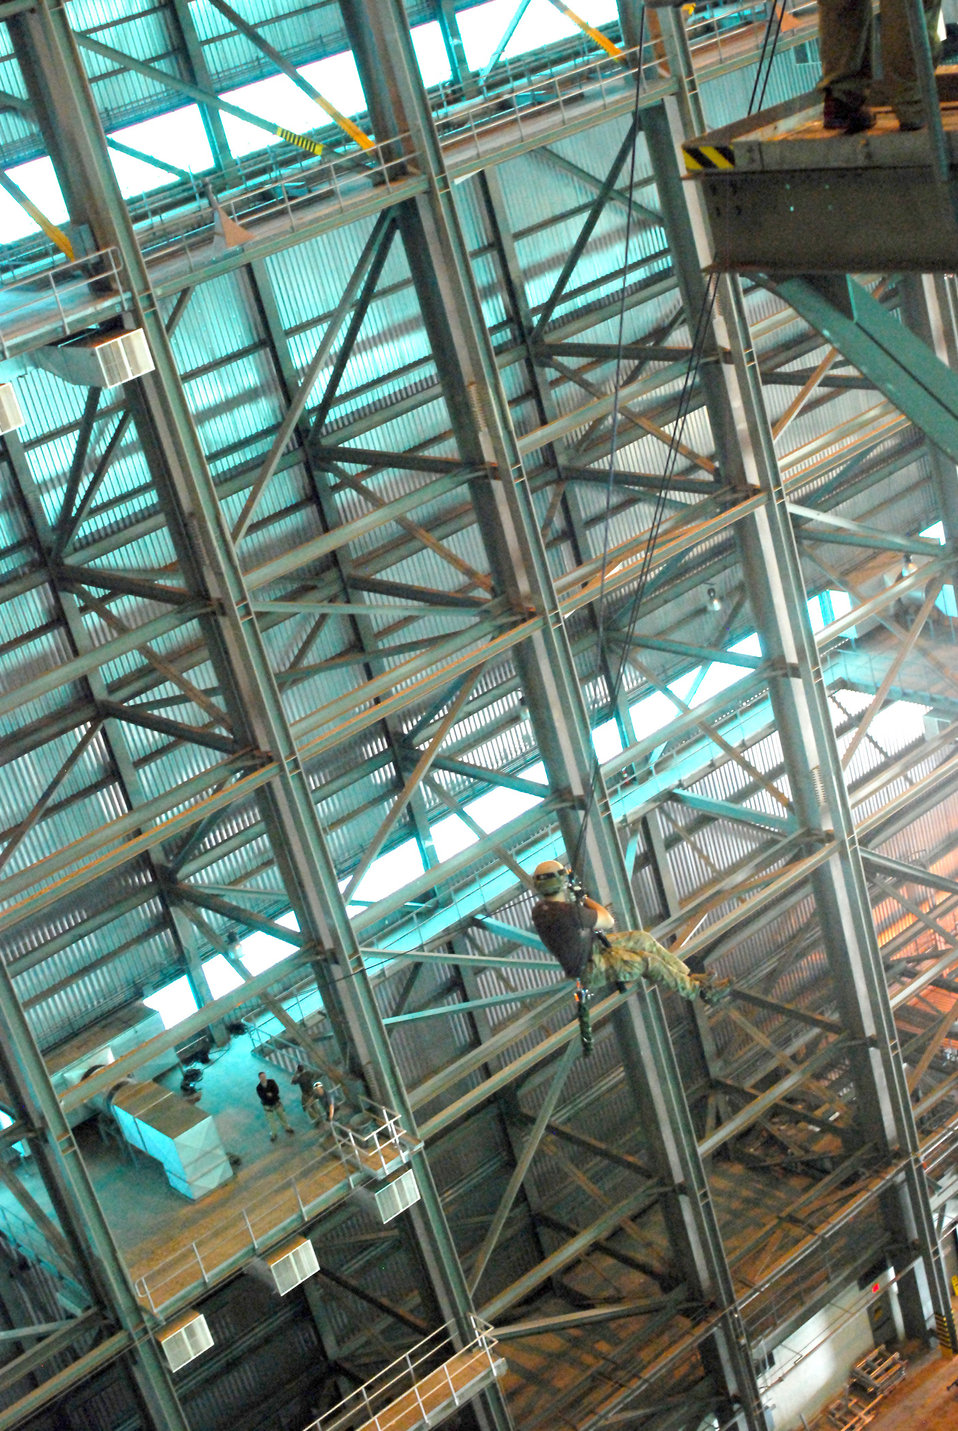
Rescue Airmen take on 'Titan' training

A pararescueman, or PJ, from the Air Force Reserve Command's 920th Rescue Wing zip-lines to a platform during rescue training Jan 20, 2011, at Cape Canaveral Air Force Station, Fla. This is one of many methods used by PJs and combat rescue officers to get to a patient for treatment. The training is high-angle, high-altitude and confined-space rescue refresher for PJs and CROs.